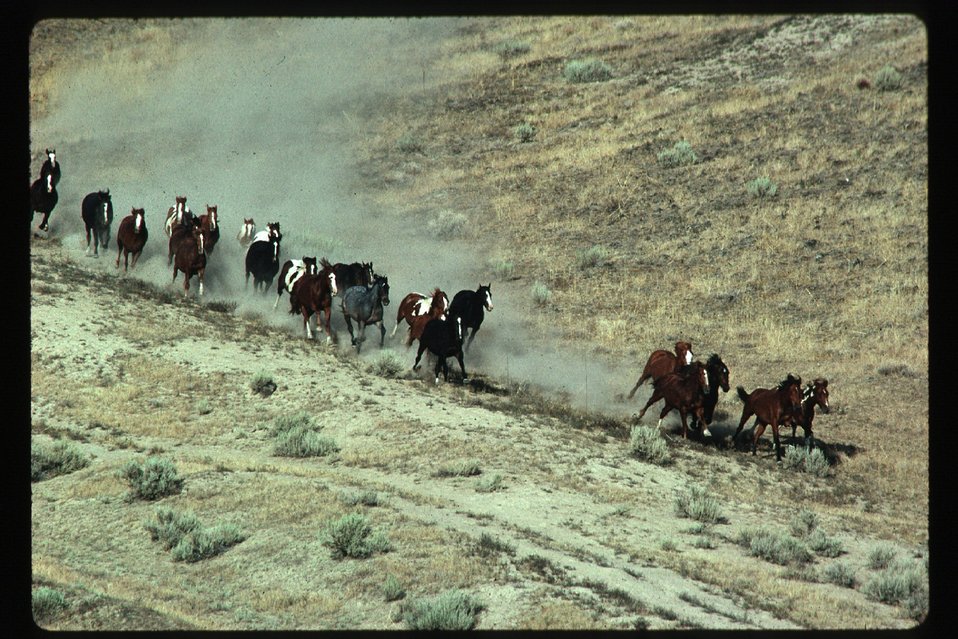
Wild horse roundup Wild Horse and Burro Adoption Program LSRD Lower Snake River District